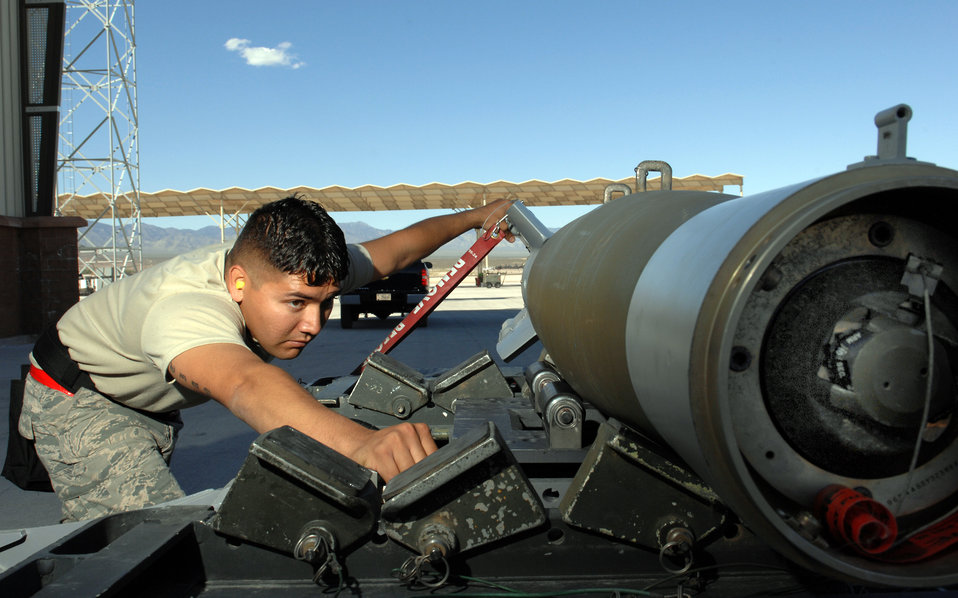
Training for unmanned aircraft systems

Staff Sgt. Bobby Domanski secures a guided bomb unit-12 Paveway II laser-guided bomb onto the munitions rack during weapons load training April 22 at Creech Air Force Base, Nev. MQ-9 Reaper load crewmembers were conducting monthly training to maintain their qualifications on the airframe. Sergeant Domanski is a Reaper weapons loader assigned to the 432nd Aircraft Maintenance Squadron.